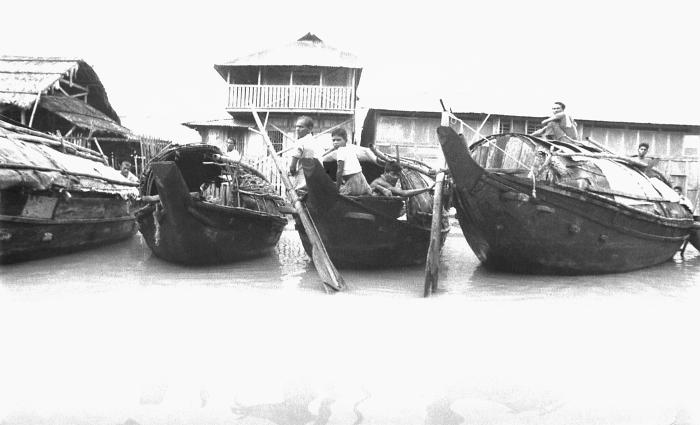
This image depicted a number of small boats that were used to transport goods from town to town amongst the Bangladesh communities. At times, families lived on these boats using them as a permanent dwelling. This photograph provided by Dr. Stan Foster, and captured by Pierre Claquin, M.D., B.A.C., who at the time was a member of the World Health Organization's Smallpox Eradication Program. It was part of a series photographed by former E.I.S. officer, Stanley O. Foster M.D., M.P.H., and was one of a series entitled 'The Story of One Smallpox Jeep', which depicted the travails faced by the jeep, and its occupants of public health practitioners, as they road through the Bangladesh countryside in an attempt to eradicate smallpox from the country.